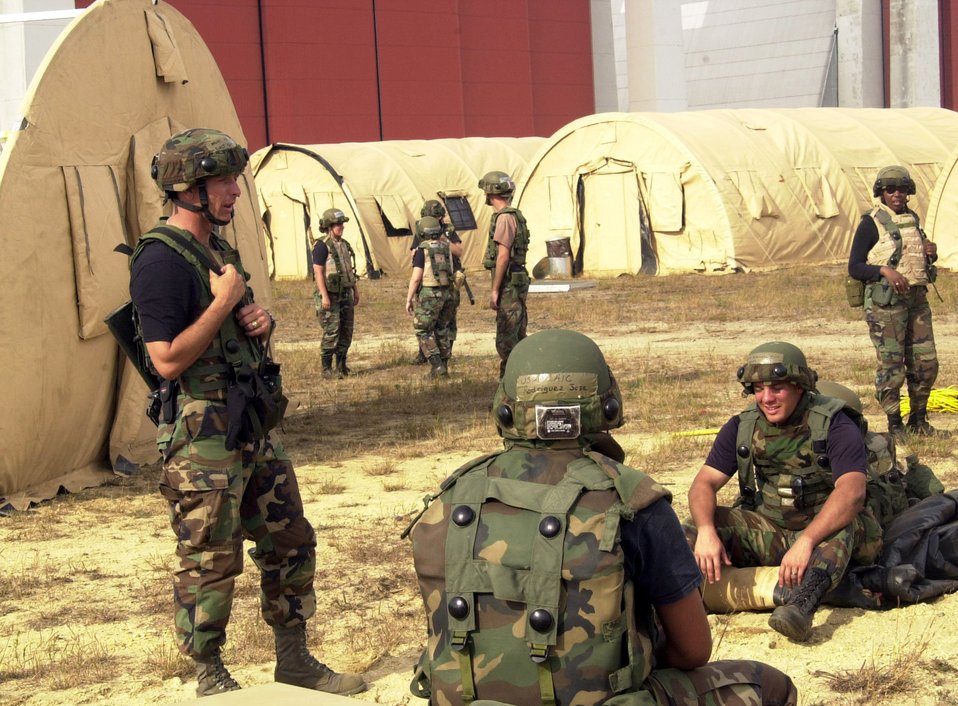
First sergeants and Eagle Flag train Airmen

Master Sgt. Robin Young talks with Airmen deployed to Exercise Eagle Flag Oct. 23 at Naval Air Engineering Station Lakehurst, N.J. The exercise is operated by the Air Force Expeditionary Center's 421st Combat Training Squadron from Fort Dix, N.J. Sergeant Young was the first sergeant deployed from the 99th Civil Engineer Squadron at Nellis Air Force Base, Nev.